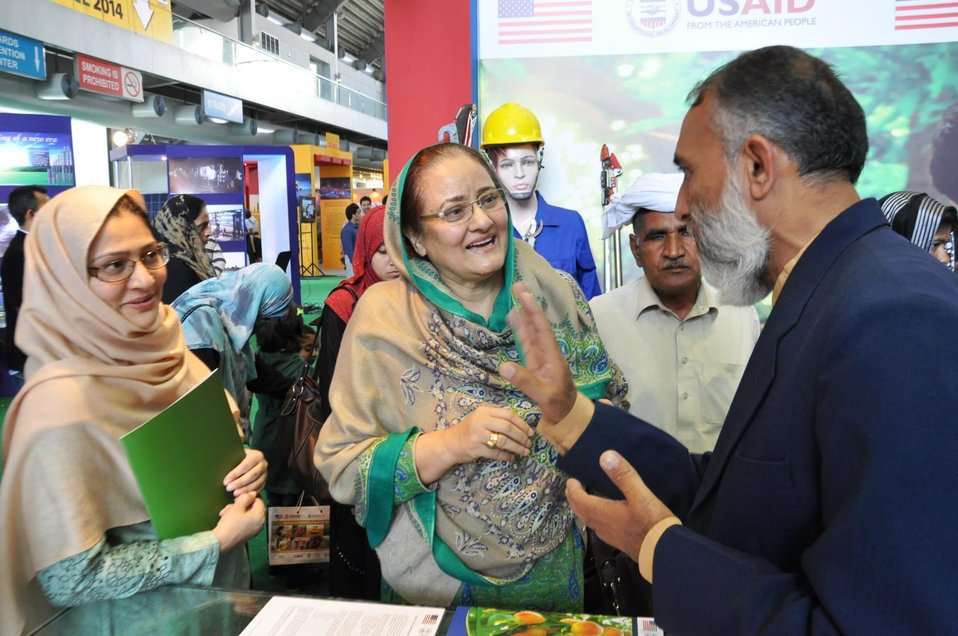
USAID Firms Project at the Dawn Agri Expo 2014

Female visitors at the USAID Firms Stall in discussion with the project's staff.